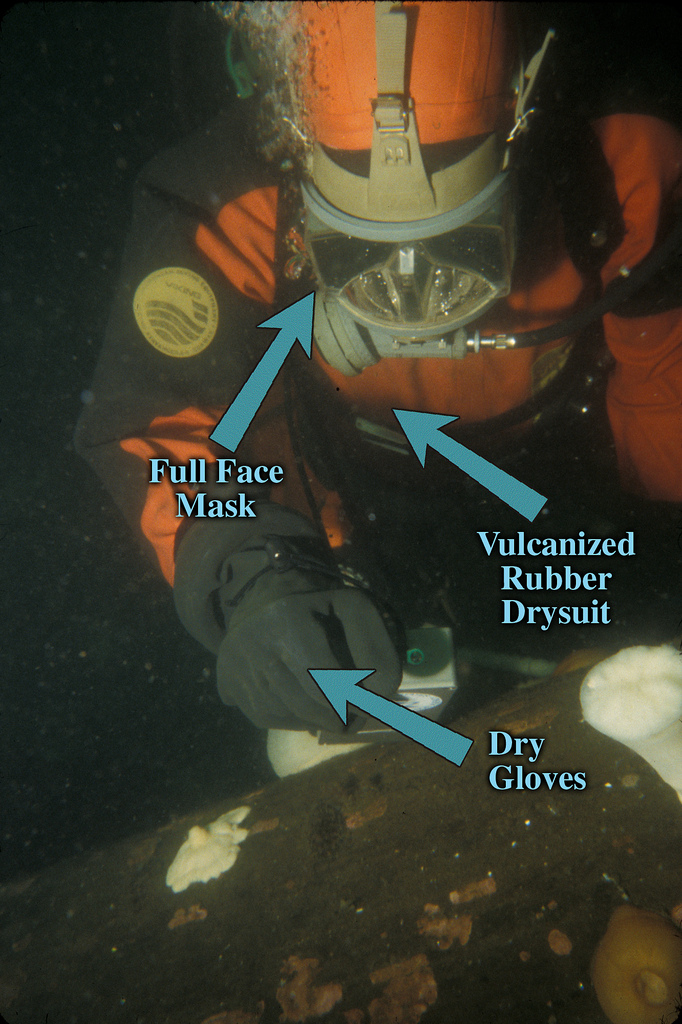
Diving in Polluted Water

For light to moderately polluted areas, or dive sites that have the potential to be contaminated extra precautions are necessary.

Divers should be kept completely dry and use a decontamination compatible drysuit.

EPA studies have shown that a drysuit with a slick exterior can be decontaminated with simple potable water for sites with microbial contamination.

Photo of diver Rob Pedersen by Sean Sheldrake, EPA.